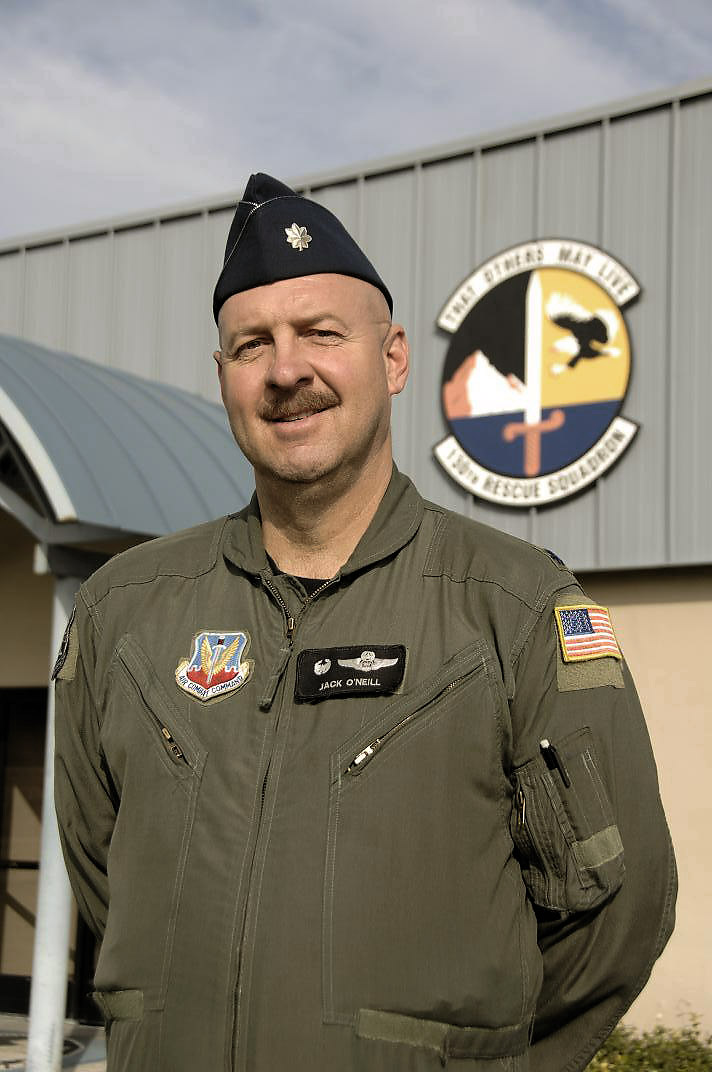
Squadron commander saves lives on his way to drill

Lt. Col. Jack O'Neill witnessed a crash during his drive to the second day of the weekend drill at Moffett Federal Airfield, Calif., Dec. 7. Colonel O'Neill and a truck driver pulled four survivors from the scene. Colonel O'Neill is commander of the 130th Rescue Squadron.